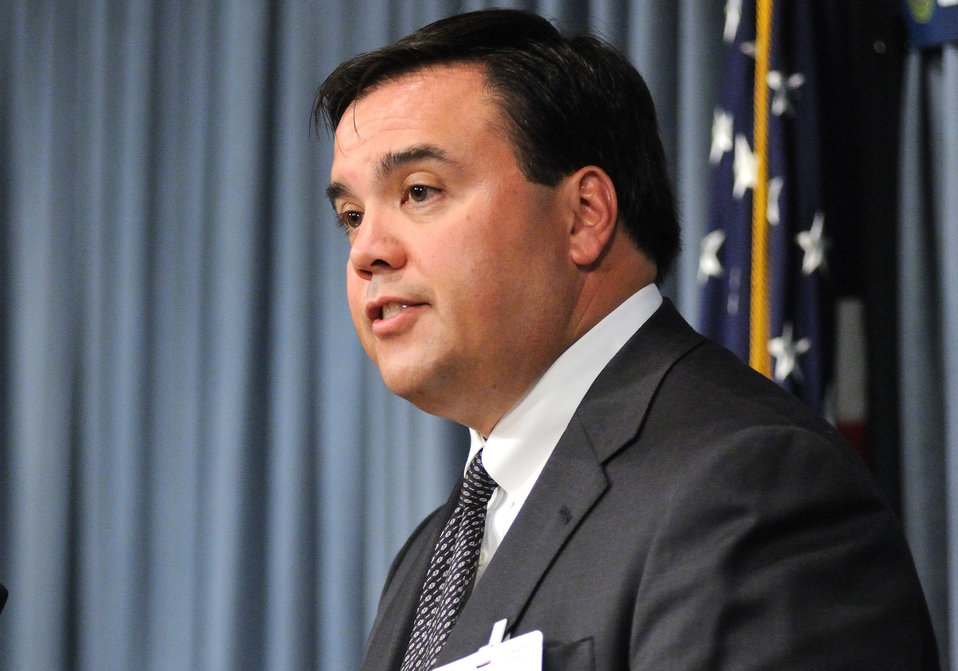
AAPI Heritage Month 2011 (1)